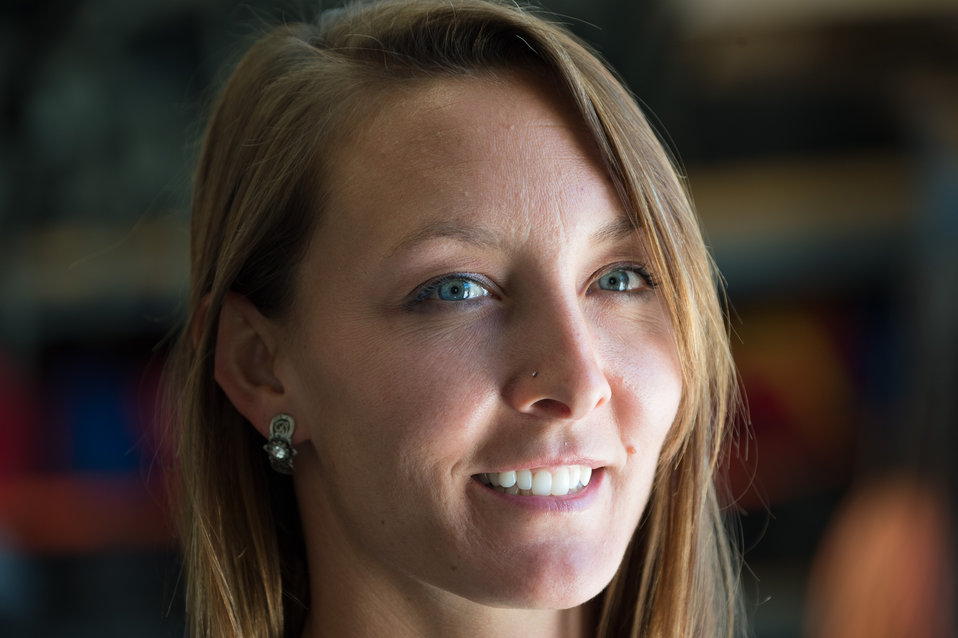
Chief Manifest Specialist Jessica Martin is in charge of ensuring the right veteran wildland firefighter rappeller is assigned with the helicopters, spotters and evaluators that they need to train and become recertified at the U.S. Department of Agriculture (USDA) U.S. Forest Service (USFS) National Helicopter Rappel Program’s Rappel Academy at Salmon Air Base in Salmon, ID on Wednesday, May 14, 2014. From May 12, 2014, 72 veteran rappellers from all over the nation, 30 support staff, and three helicopters with flight crews attend the training at Salmon Air Base. Participants will rappel into the Perreau Creek area. The annual training is delivered in accordance with the National Rappel Operations Guide; strengthen leadership, teamwork, and communications within the rappel community, and produces quality aerial delivered firefighters for use in fire and aviation operations. The USDA Forest Service National Helicopter Rappel Program’s primary mission is initial attack. Rappel crews may be utilized for large fire support, all hazard incident operations, and resource management objectives.